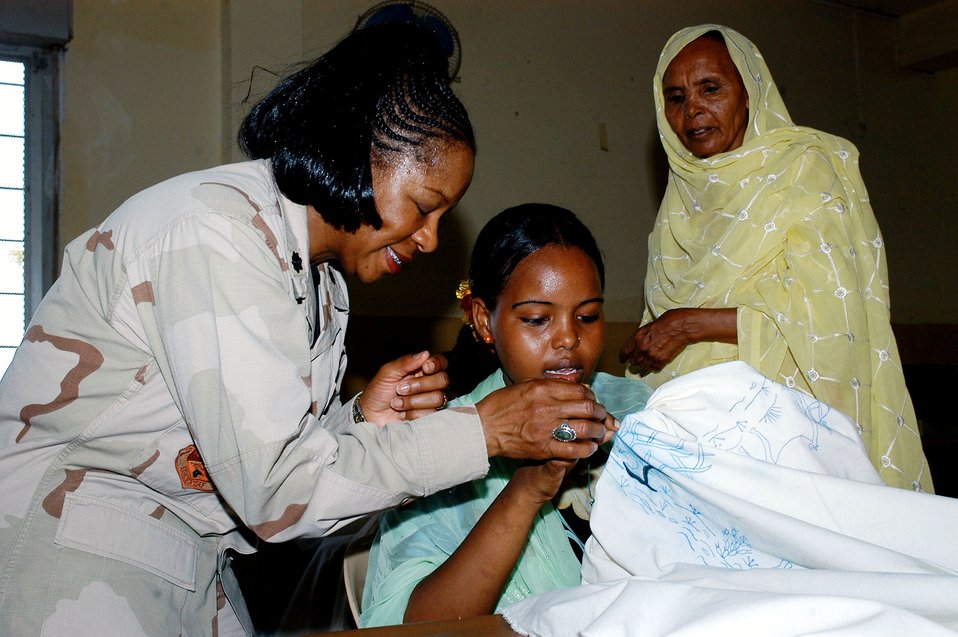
Supplies, educational aids delivered to Djibouti women

Chaplain (Lt. Col.) Oledia Bell works with a student Sept. 10 at the Union National of the Djibouti Women in Djibouti. The Union National of the Djibouti Women provides job skills training to Djiboutian women. The material is part of a donation received by the Union National of the Djibouti Women, which included a sewing machine, sewing materials, and pens and notebooks. The donation was part of Operation Hand Clasp and delivered by members of the Combined Joint Task Force - Horn of Africa Chaplain's office.